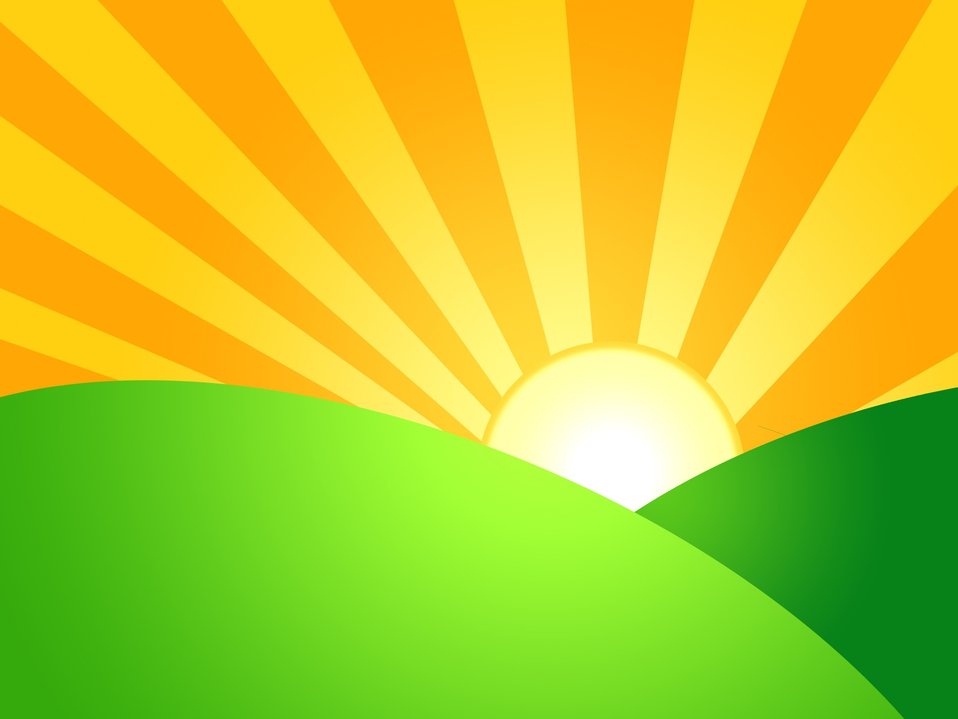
Sunrise over green hills

Illustration clipart of sun rising.